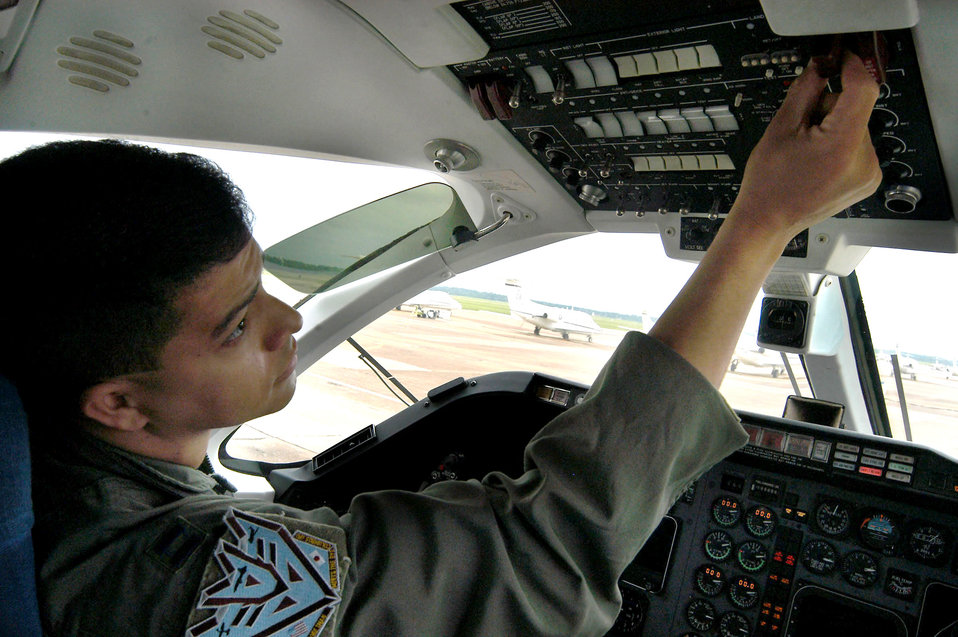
Airman achieves dream to fly 'into the wild blue yonder'

COLUMBUS AIR FORCE BASE, Miss. -- Capt. Terry Tyree Jr. adjusts the controls in a T-1A Jayhawk before a flight. He earned his third aeronautical rating when he graduated from specialized undergraduate pilot training here recently. He will learn to fly KC-10 Extenders at McGuire Air Force Base, N.J.